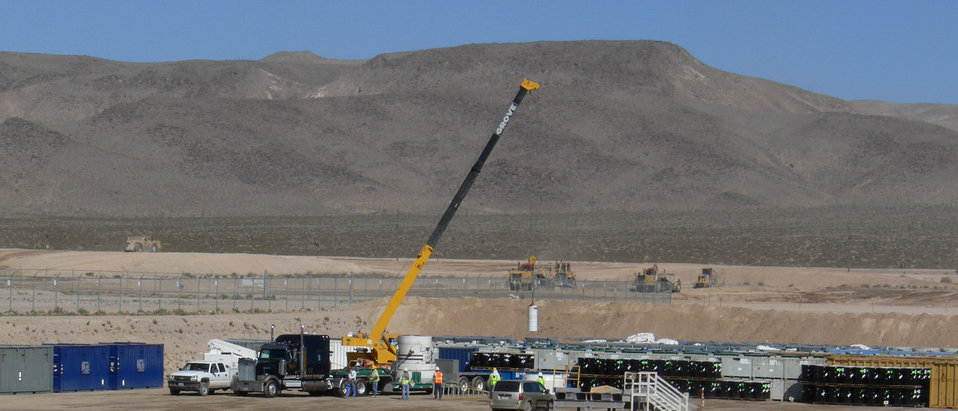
Waste management personnel at Nevada National Security Site have rigorous safety processes in place for disposing of low-level waste at Area 5 Radioactive Waste Management Site (RWMS).